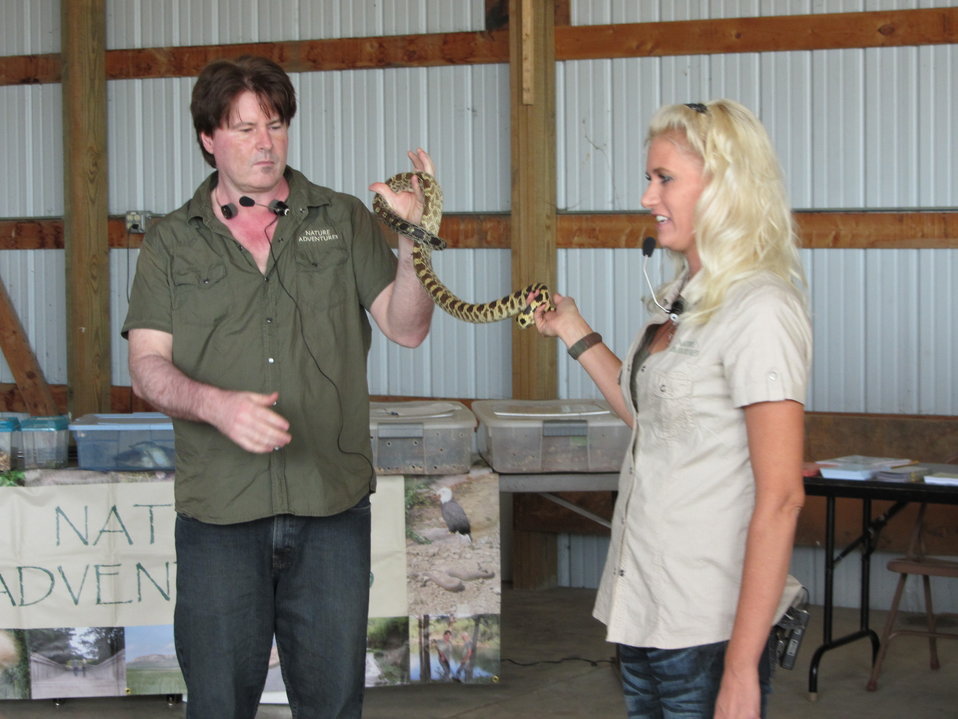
2011 Huron Prairie Fest